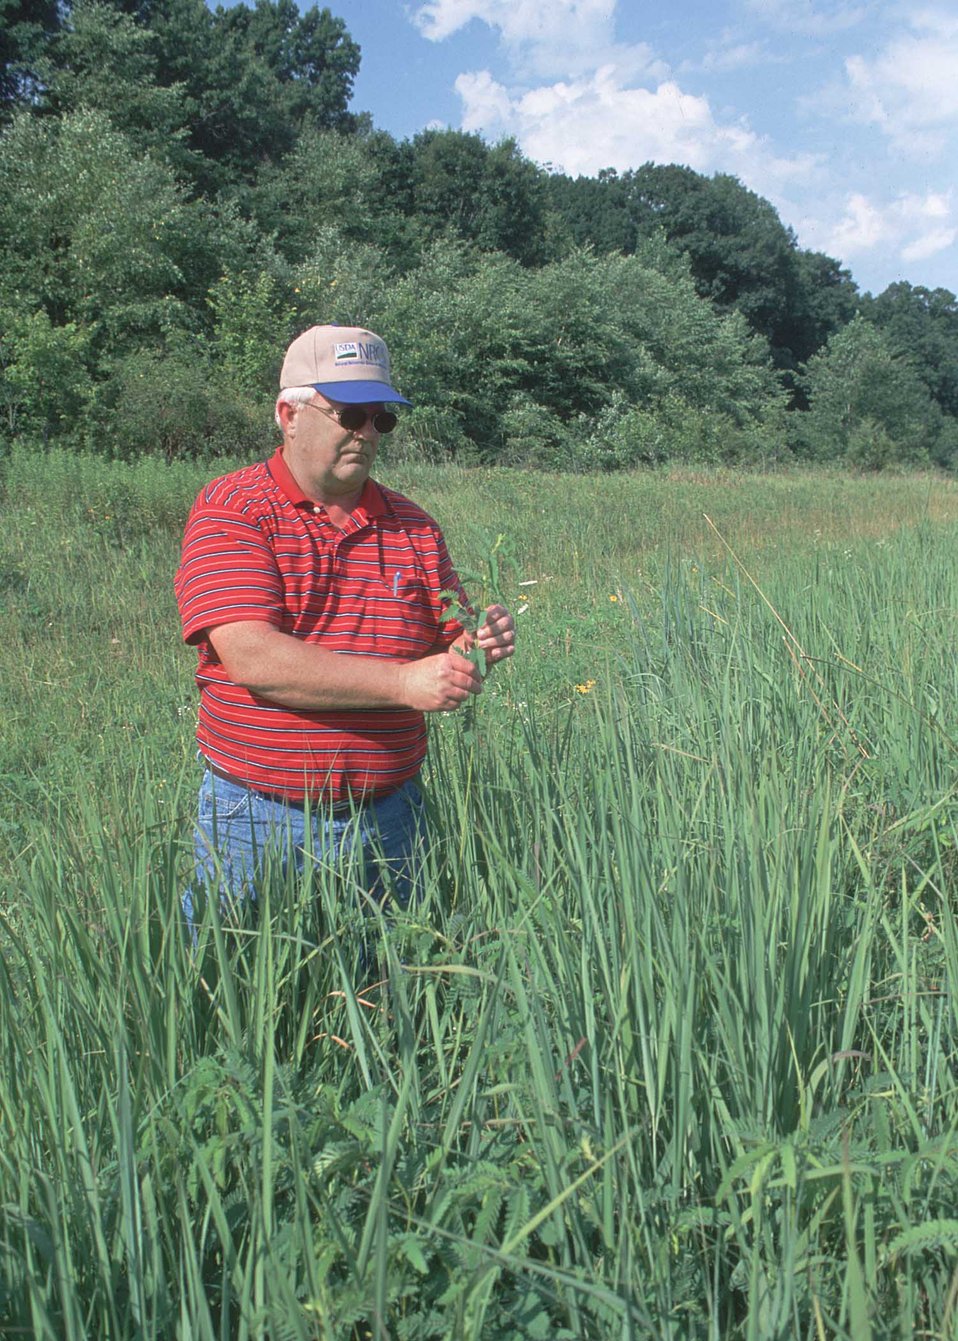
Partridge pea and short grasses are part of the transition from woodland to a native grass field. The landscape offers excellent habitat for quail and songbirds in Van Buren SWCD, Iowa.